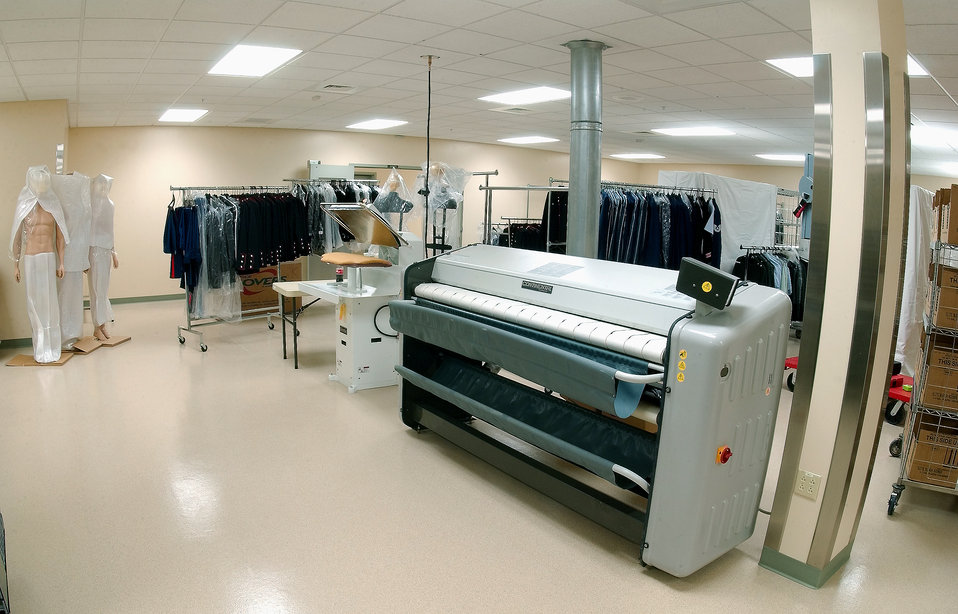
New mortuary opens

DOVER AIR FORCE BASE, Del. -- The Charles C. Carson Center for Mortuary Affairs here has the room, tools and supplies necessary to fully dress the deceased in uniform. The staff also ensures all ribbons are placed correctly on the uniforms. The new mortuary opened Oct. 28, replacing a 48-year-old facility. It is the Defense Department's only stateside mortuary.